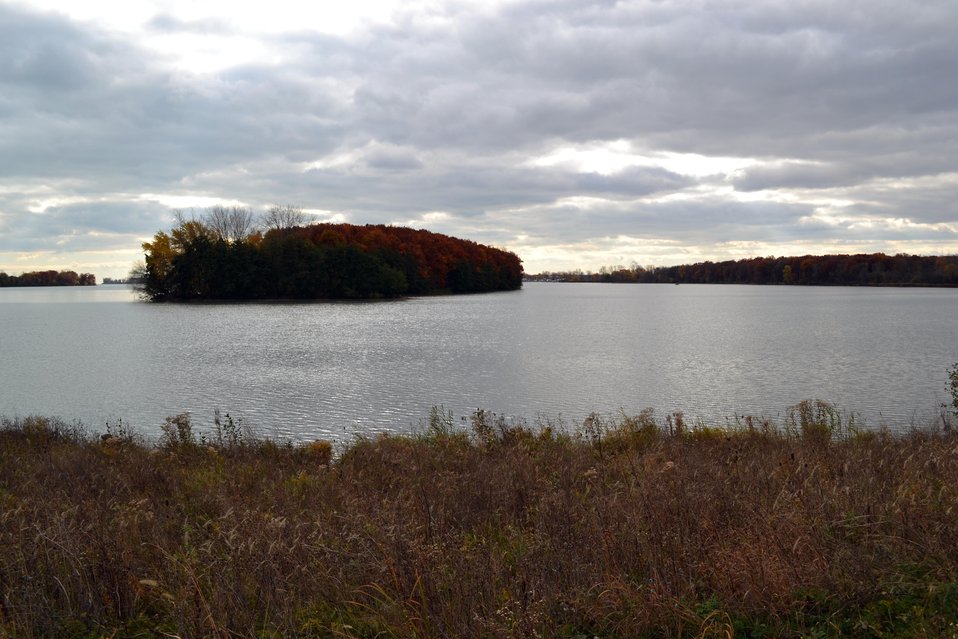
Humbug Island

Detroit River International Wildlife Refuge groundbreaking celebration.